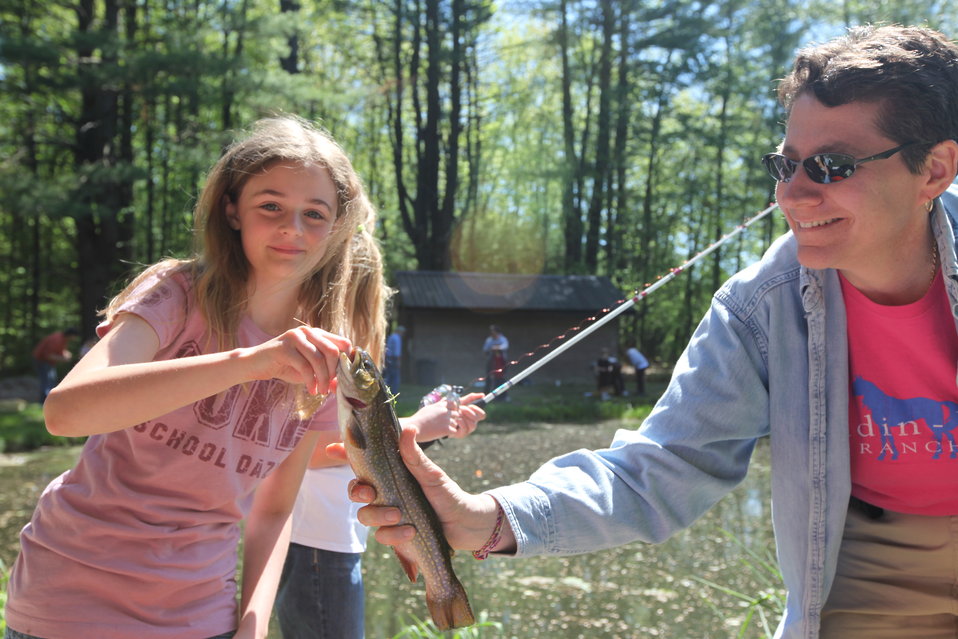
Youth Fishing Derby 2012

Megan Nagel/USFWS